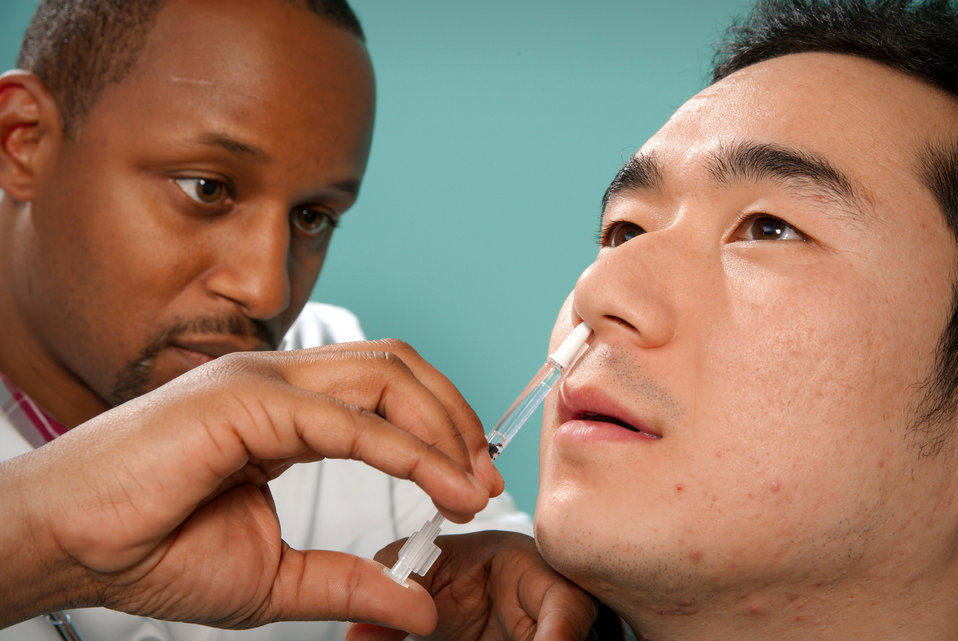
This 2009 image depicts a healthcare practitioner as he was administering the H1N1 live attenuated intranasal vaccine (LAIV) to an Asian man. Using a small syringe, he was delivering the vaccine mist into the man's right nostril.